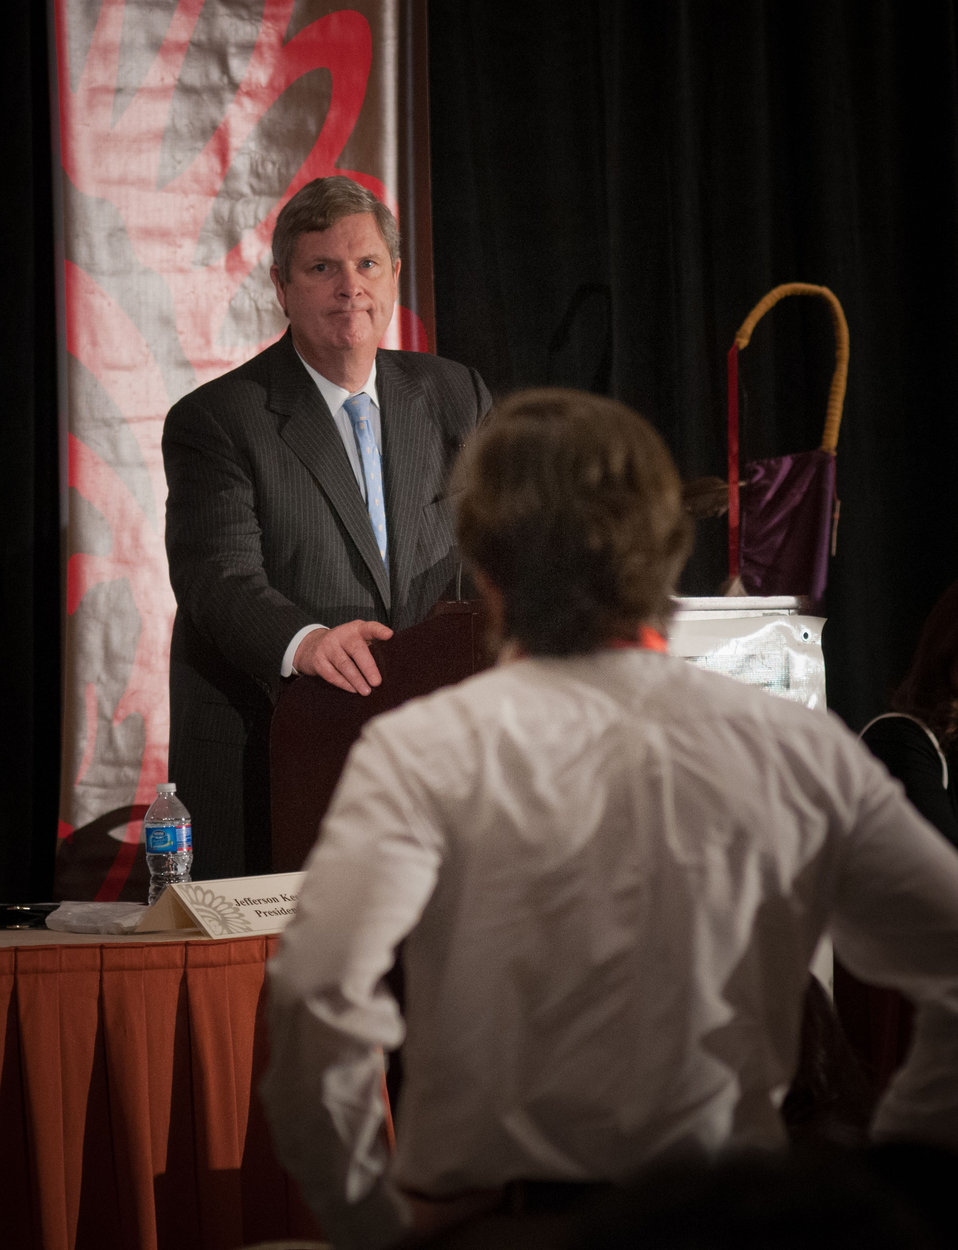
Agriculture Secretary Tom Vilsack takes and responds to a question about Memorandums Of Agreement for tribal enterprises and employment opportunities on public lands, Agriculture Secretary Tom Vilsack listens to Affiliated Tribes of the Northwest Indians’ Fawn Sharp (far left) comment and invite the Secretary to a future event, at the National Congress of American Indians Tribal Nations Legislative Summit at L’Enfant Plaza Hotel in Washington, D.C., on Wednesday March 7, 2012. Secretary Vilsack has made improving relations with Native American Tribes a priority by creating the Office of Tribal Relations and directed all U.S. Department of Agriculture (USDA) agencies to be more aware of tribal issues and engage in tribal consultation and collaboration. Secretary Vilsack reiterated USDA’s support to Native American communities with financial support for electric, broadband and wastewater infrastructure, and providing families and businesses with home loans and business grants. Secretary Vilsack emphasized USDA’s participation in the First Lady’s Lets Move in Indian Country initiative to combat childhood obesity in tribal communities.